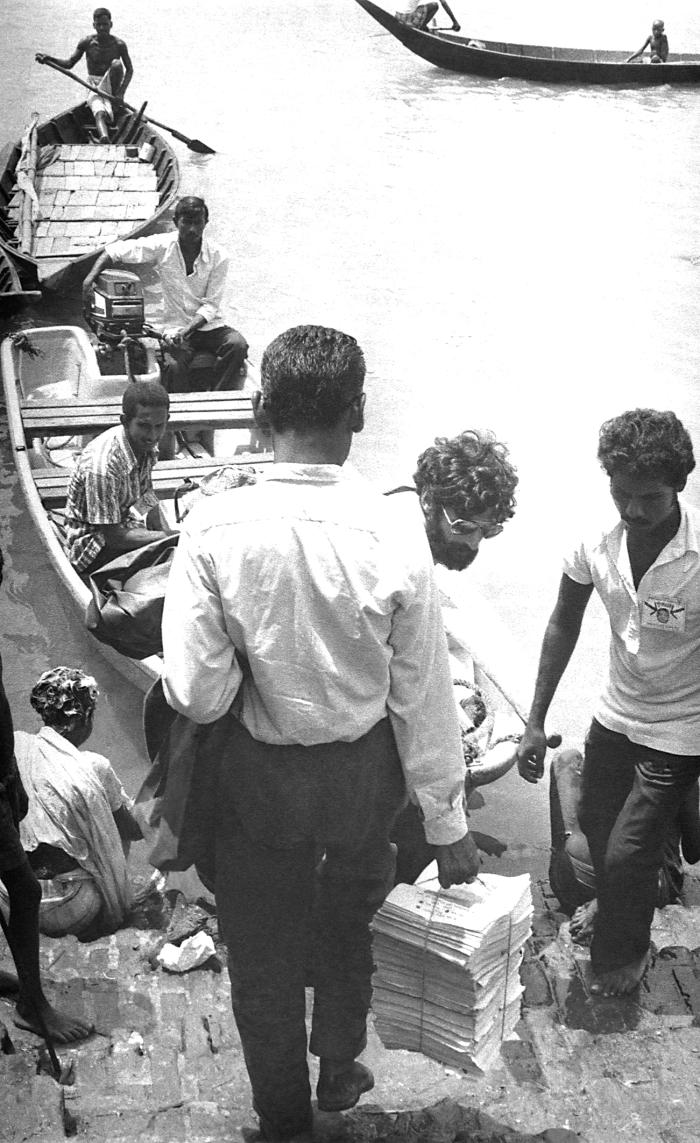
This photograph, taken during the Bangladesh smallpox eradication effort, shows a local health officer (back to camera) carrying smallpox identification reward posters, while a World Health Organization (WHO) epidemiologist, Dr. Bruce Weniger (wearing sunglasses), exits a riverboat at a ferry port in the city of Dacca (now Dhaka). From here, the team took search materials directly across the Buriganga River to the thana (police station) of Keraniganj for an upcoming search campaign. The 'searchers' would use whatever modes of travel were available in order to complete their journeys from village to village. Pole-driven riverboats, motor powered boats known as 'river taxis', and very large boats would transport villagers from one community to another, much the same way as modern, metropolitan city dwellers use buses and taxis. The Bangladesh riverine culture made these modes of transport integral to the daily lives of most villagers.